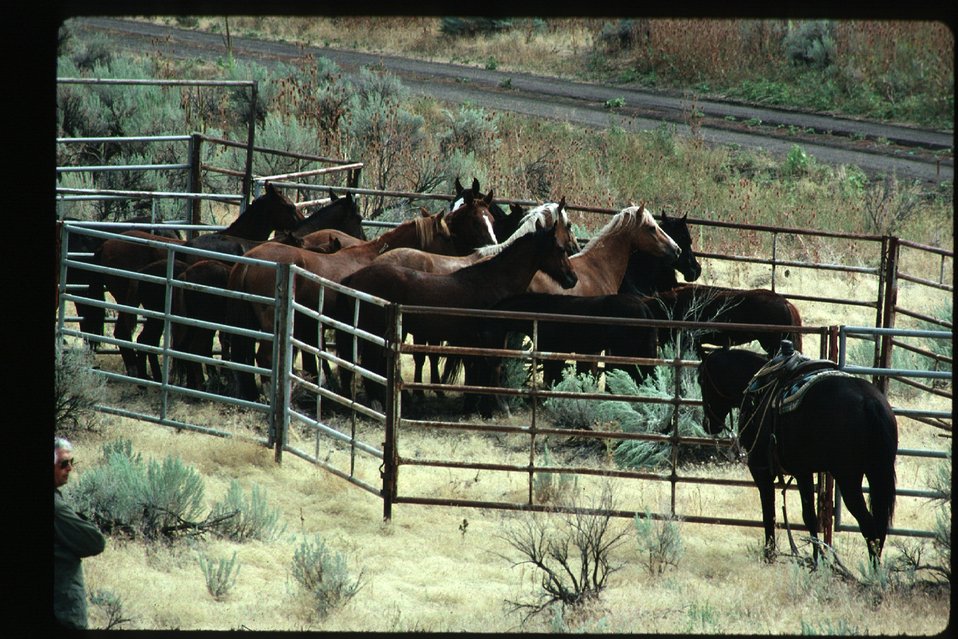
Wild Horse and Burro Gathering or roundup LSRD Lower Snake River District